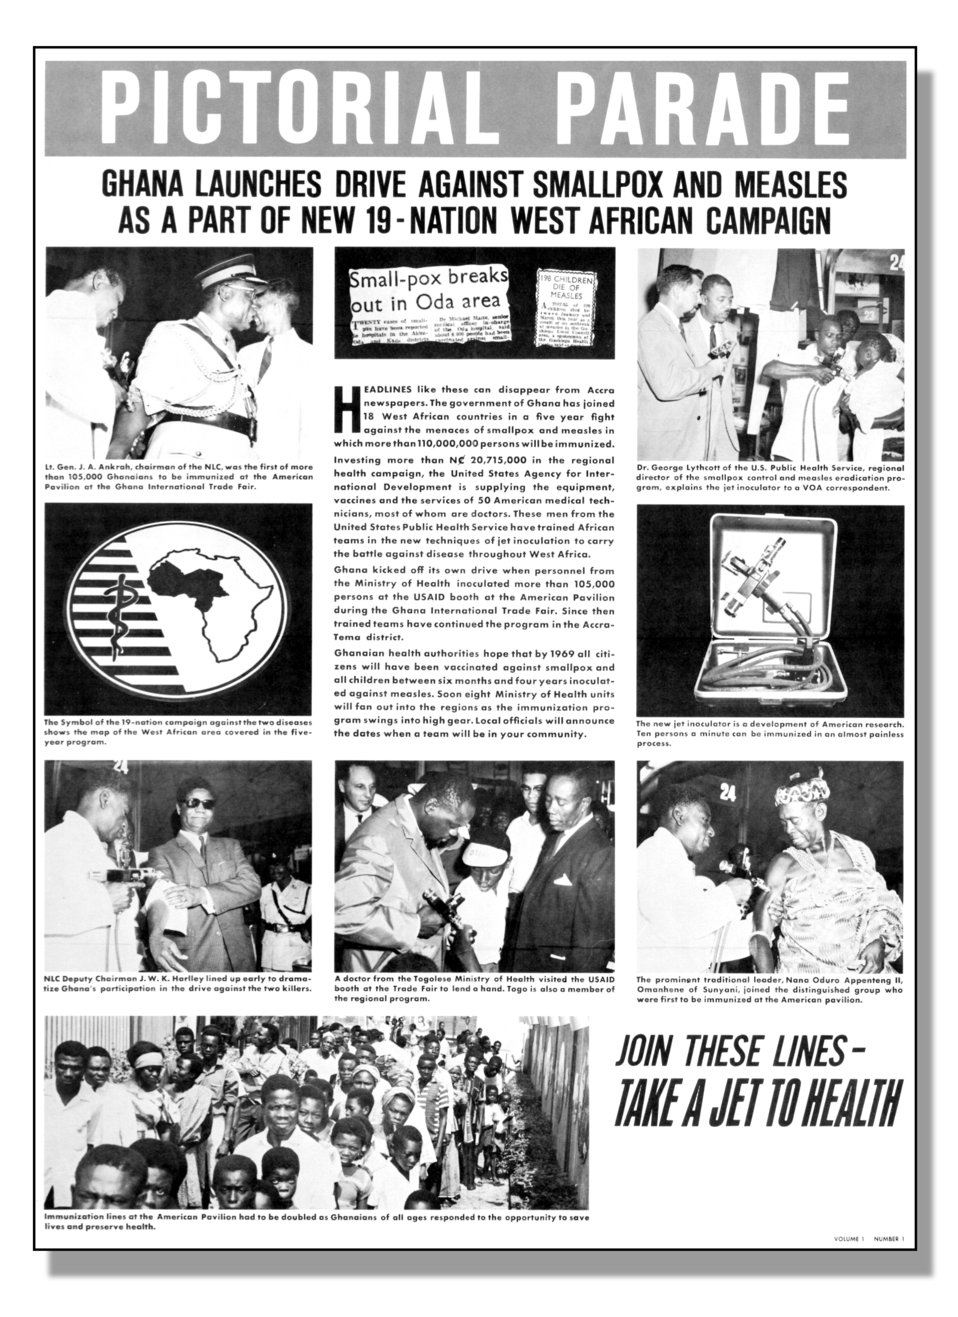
Early pre-1979 poster created to promote the importance of Smallpox and Measles vaccinations in foreign lands.